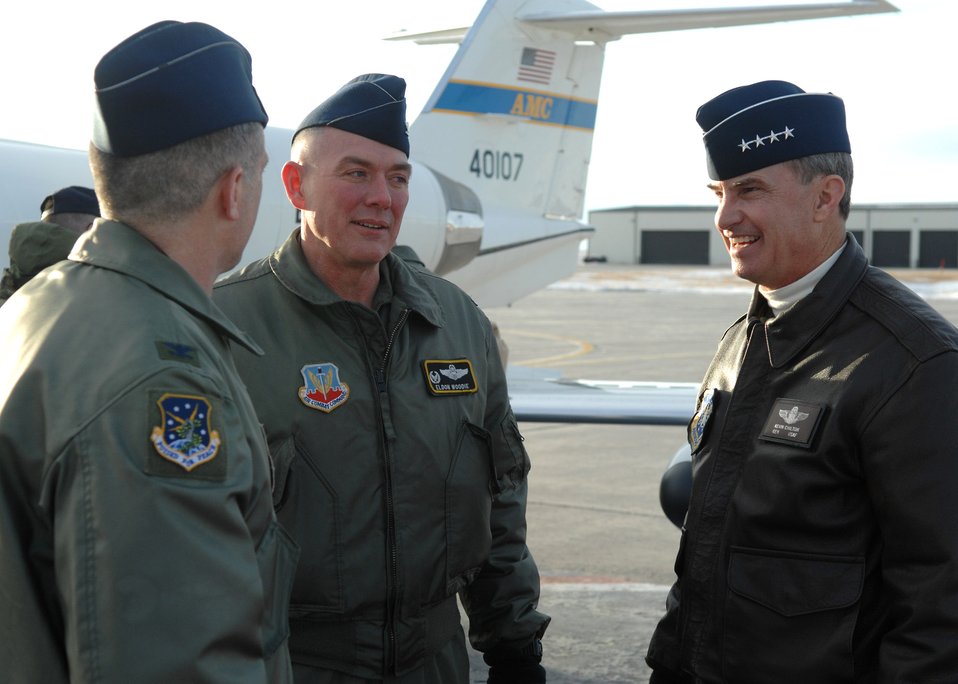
AFSPC commander: Minot in 'thick of the fight'

Gen. Kevin P. Chilton speaks to Col. Eldon Woodie and Col. Marty Whelan upon his arrival Jan. 22 to Minot Air Force Base, Mont. General Chilton is the Air Force Space Command commander who visited Minot AFB as part of a base orientation to familiarize him with the wings now under his command. Colonel Woodie is the 5th Bomb Wing commander, and Colonel Whelan is the 91st Space Wing commander.